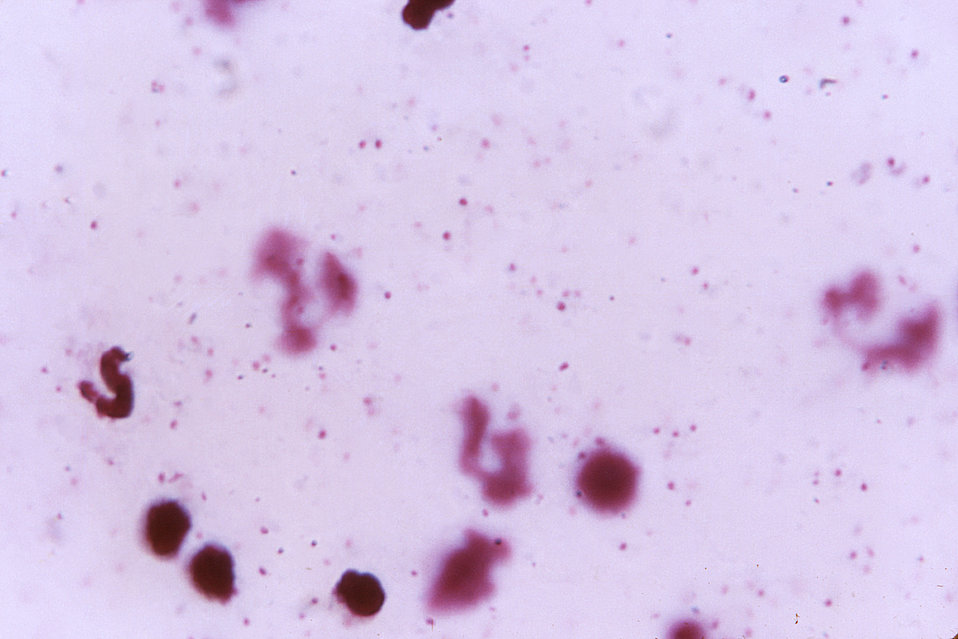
This thick film blood smear micrograph depicts numerous ring-form Plasmodium falciparum trophozoites, as well as a number of white blood cells (WBC).